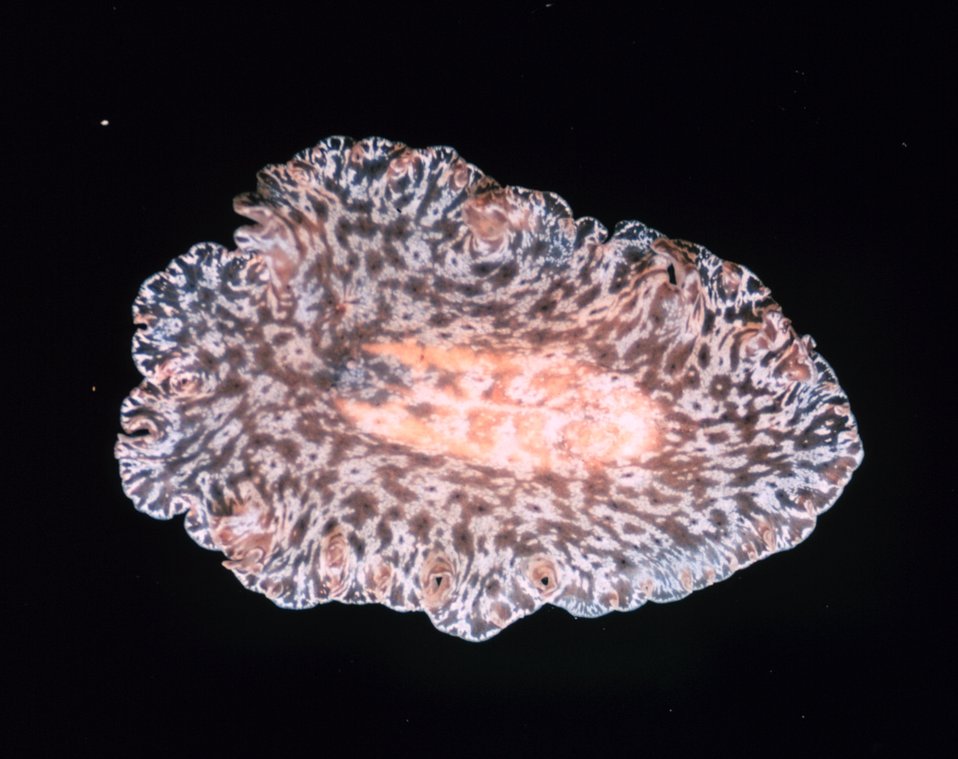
Flatworm